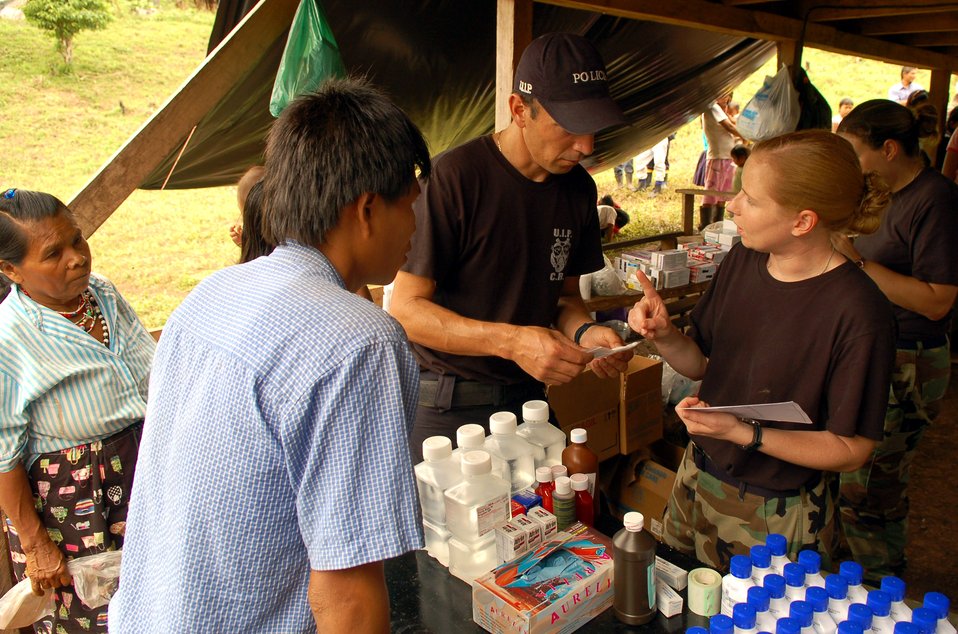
American servicemembers deploy to Costa Rica

Staff Sgt. Aimee Orndorff explains medication directions to a Costa Rican translator in the pharmacy of a makeshift clinic Dec. 18 at Piedra Mesa, Costa Rica. Sergeant Orndorff is assigned to the Joint Task Force-Bravo medical element. JTF-Bravo deployed 28 servicemembers from Soto Cano Air Base, Honduras, to Costa Rica at the invitation of the country's ministry of health for a medical readiness training exercise.